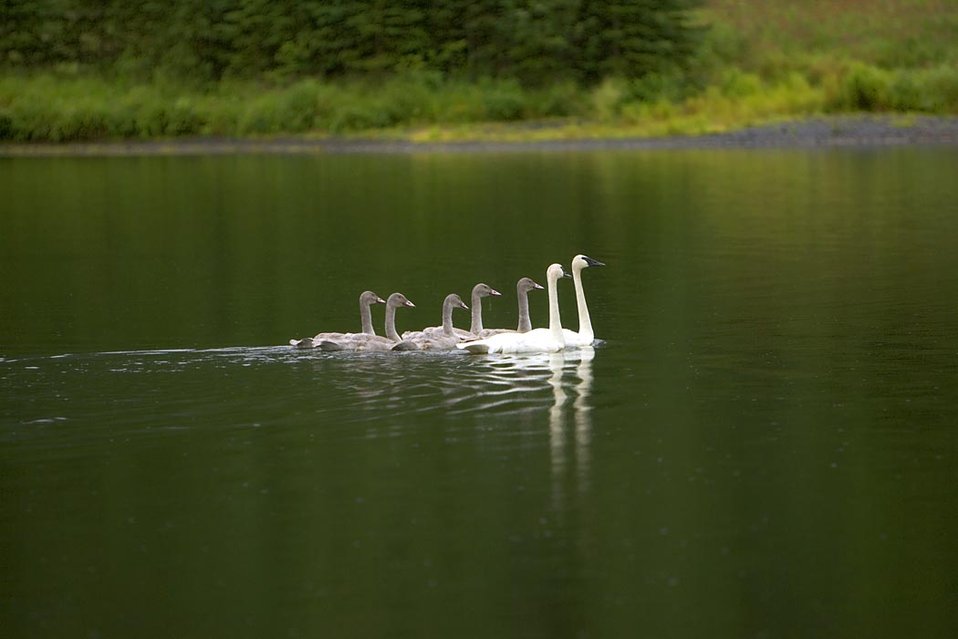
swan pair with cygnets

Kenai National Wildlife Refuge, AK
2008